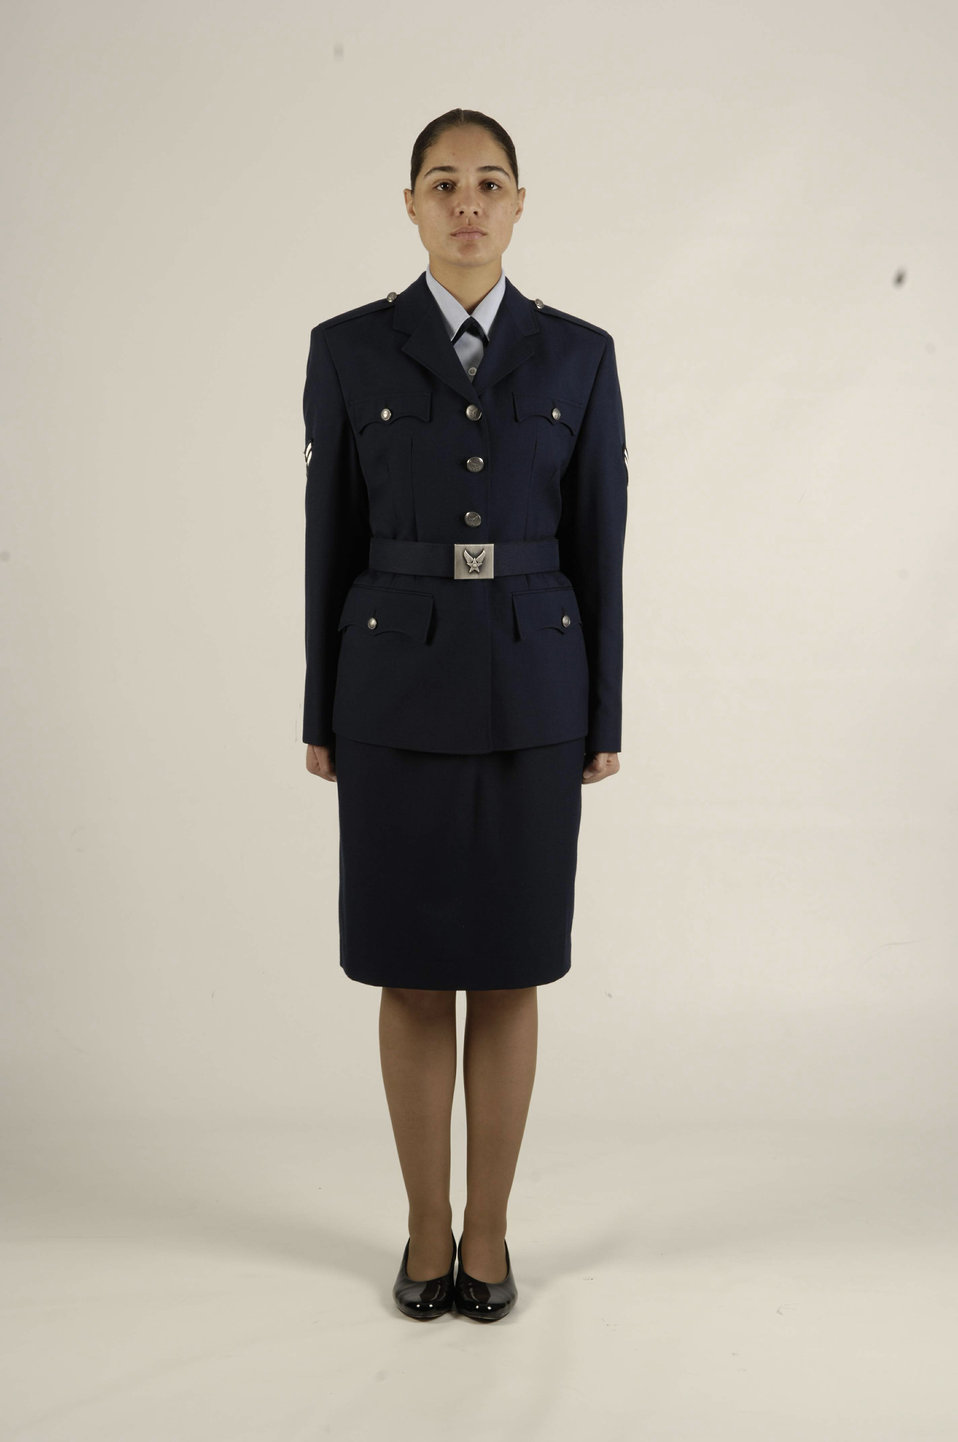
Heritage Coat production uncertain despite favorable reviews

Officer and enlisted male and female participants wear-tested three variant issue designs of the proposed Heritage Coat. The differences between the coats were a fabric belt and slide buckle, the honor guard style belt and buckle, and the four-button, no belt style.